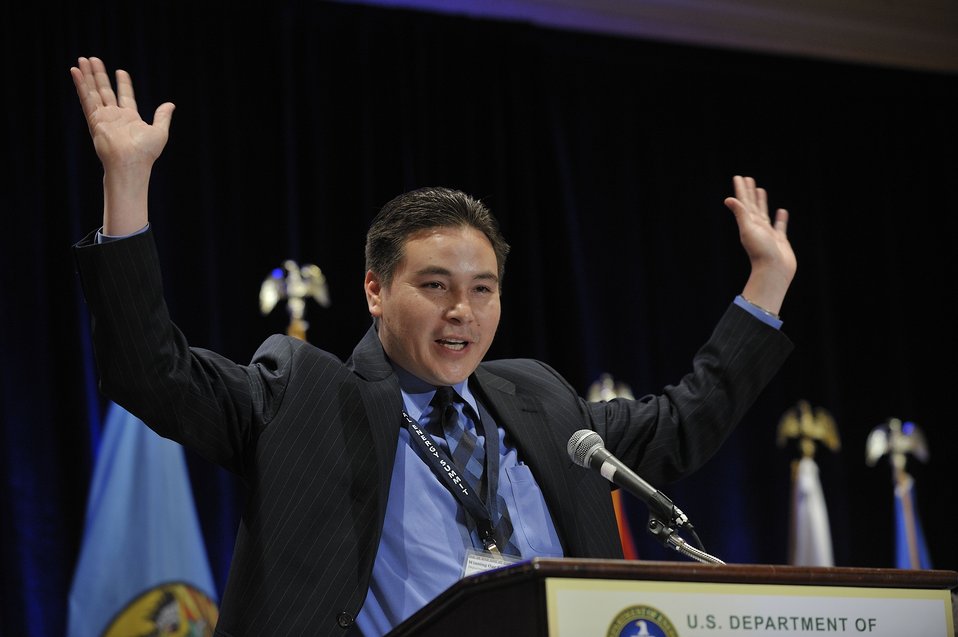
Tribal Energy Summit

Del Laverdure leads the Summit participants in a mid-afternoon stretch.